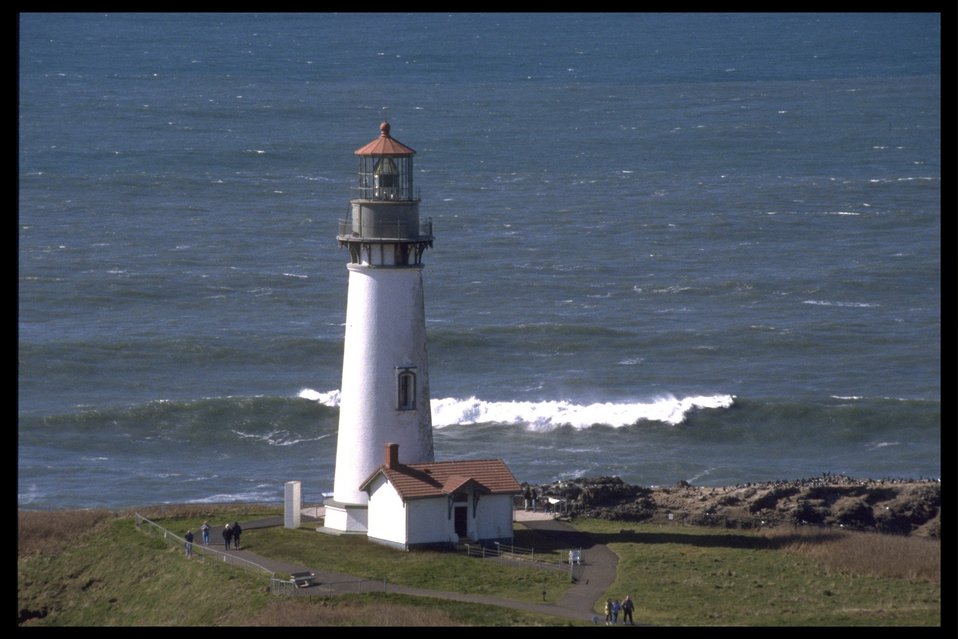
Yaquina Head Lighthouse.